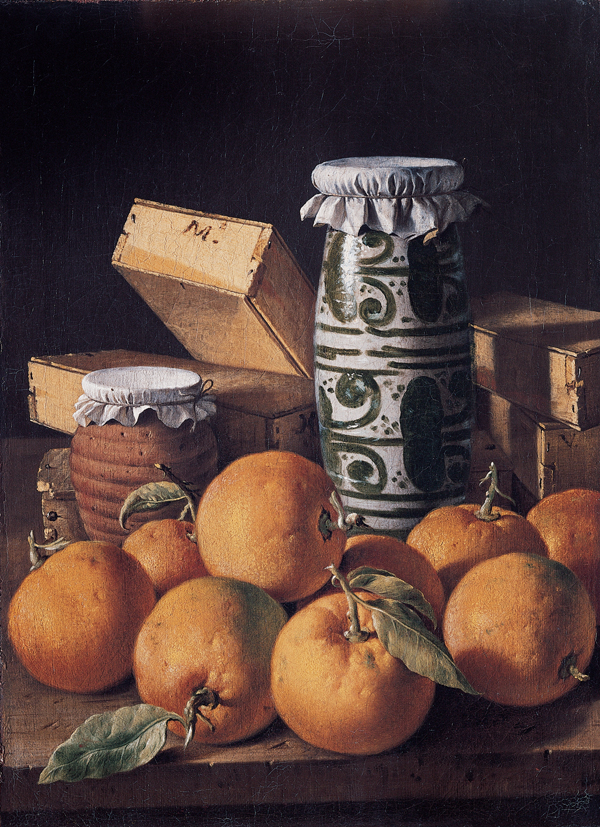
'Still Life with Oranges, Jars, and Boxes of Sweets', by Luis Meléndez